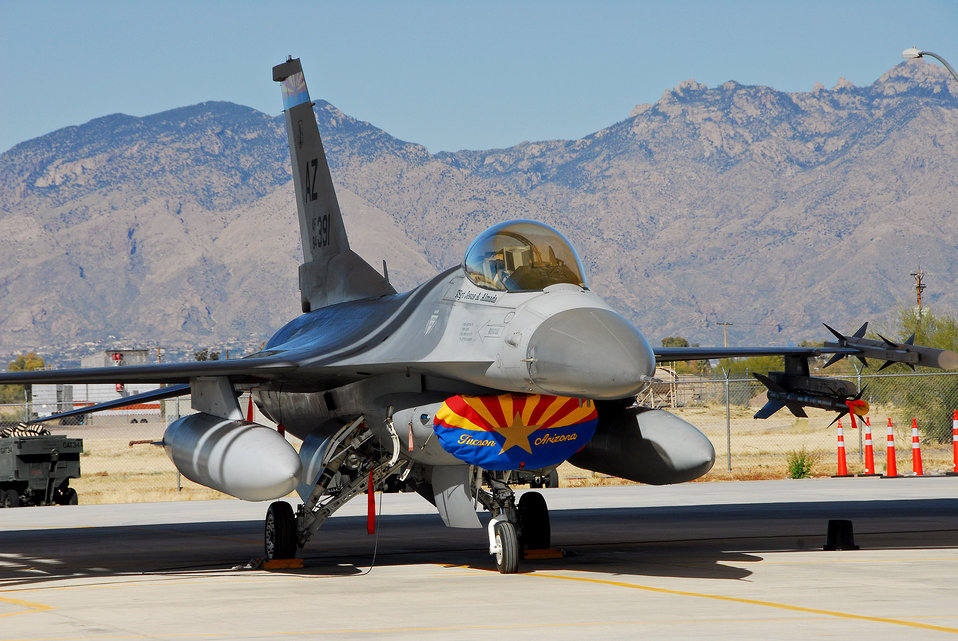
Arizona Air Guard to watch over Super Bowl

An F-16 Fighting Falcon sits ready to deploy at a moment's notice at the 162nd Fighter Wing's Alert Detachment at Davis-Monthan Air Force Base, Ariz. Arizona Air National Guardsmen from Tucson will fly this aircraft and others to secure the airspace over Super Bowl XLII.